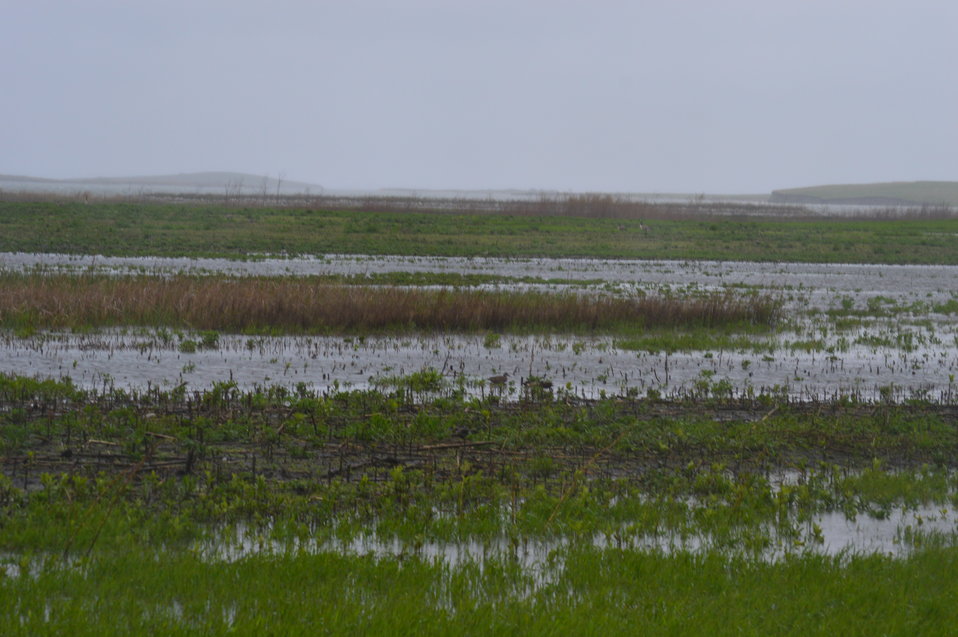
Wetlands

Scenery and wildlife and Audubon National Wildlife Refuge in North Dakota.